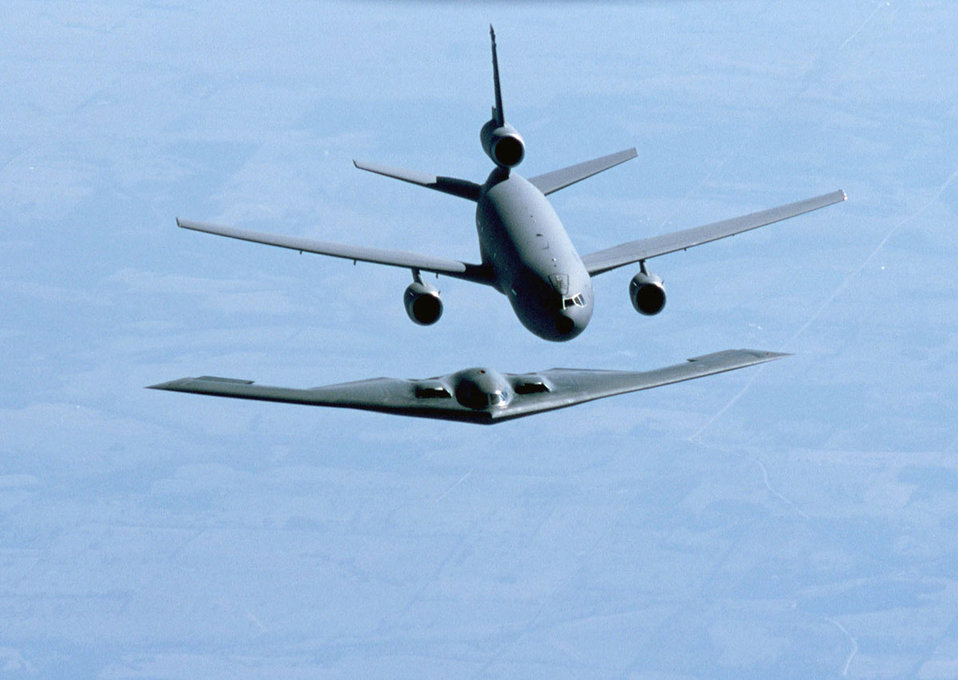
Ready to gas and go

FILE PHOTO -- A KC-10A Extender from McGuire Air Force Base, N.J., prepares to refuel a B-2 Spirit bomber during a training exercise on March 23, 2001. Although the KC-10's primary mission is aerial refueling, it can combine the tasks of tanker and cargo aircraft by refueling fighters while carrying the fighters' support people and equipment during overseas deployments.